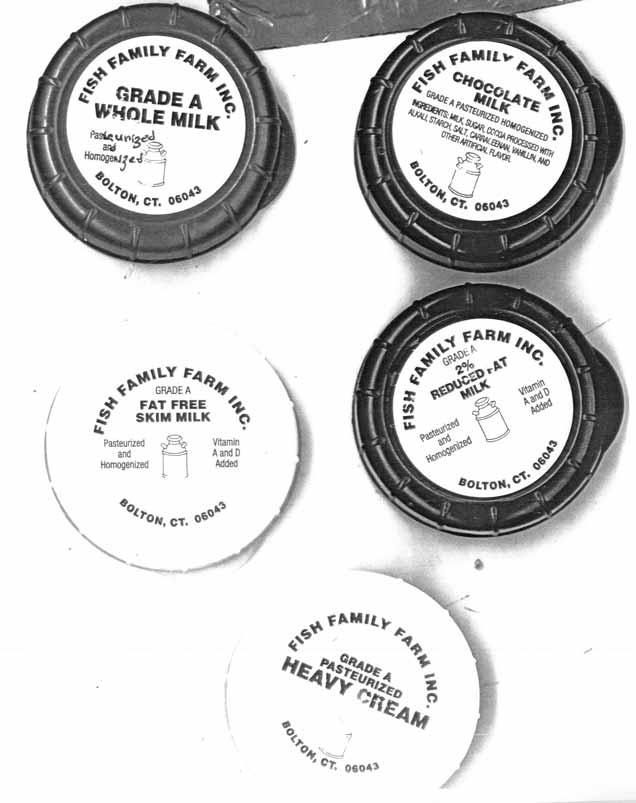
RECALLED – Milk and cream

June 12, 2014 – Fish Family Farm, Inc. Issues Allergy Alert On Milk Products And Cream Due To Potential Peanut And Tree Nut Contamination.